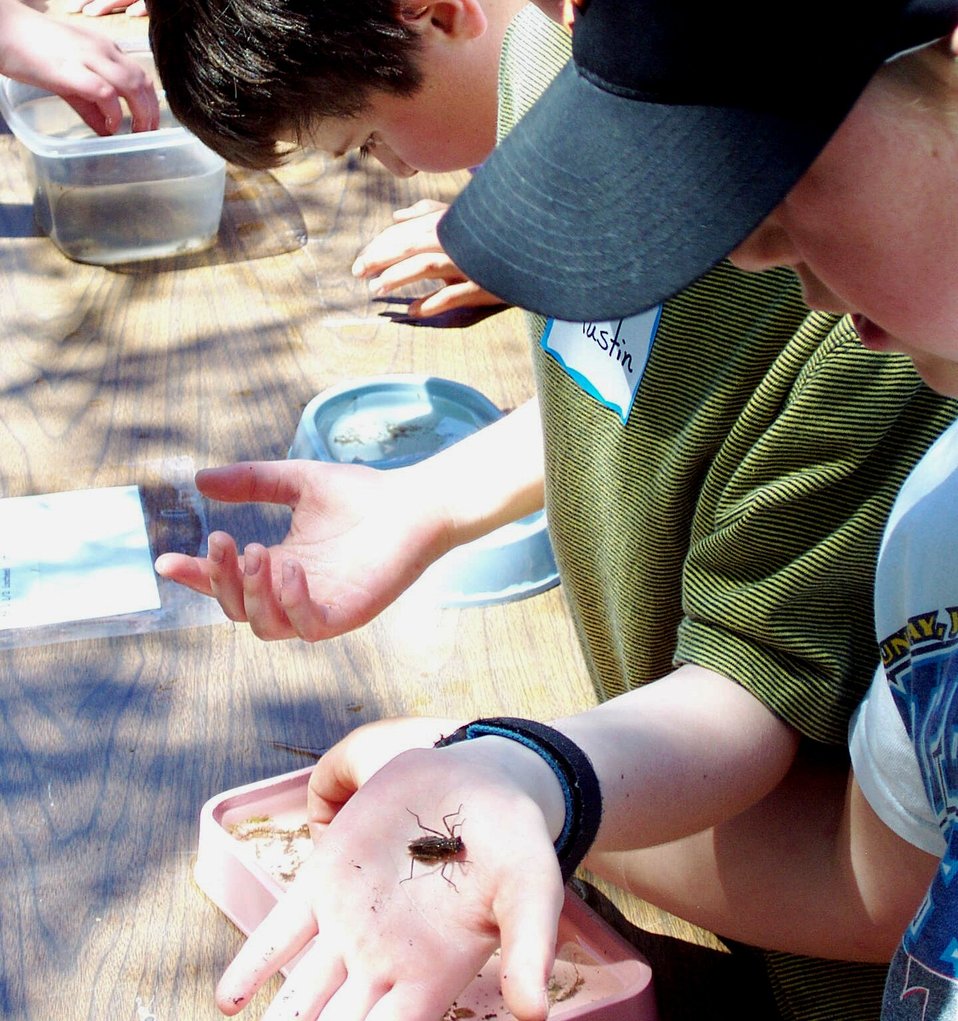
Creston National Fish Hatchery's Kids Fish Day

The Creston National Fish Hatchery, in association with the Flathead Community of Resource Educators (Flathead C.O.R.E.), holds an annual Fish Fun Fair to promote National Fishing and Boating Week.

Creston National Fish Hatchery invites 3rd graders from local schools to visit the hatchery and participate in learning stations, which may include fish anatomy, fish identification, fishing equipment and casting, hatchery tours, and other interesting exhibits with an aquatic focus.